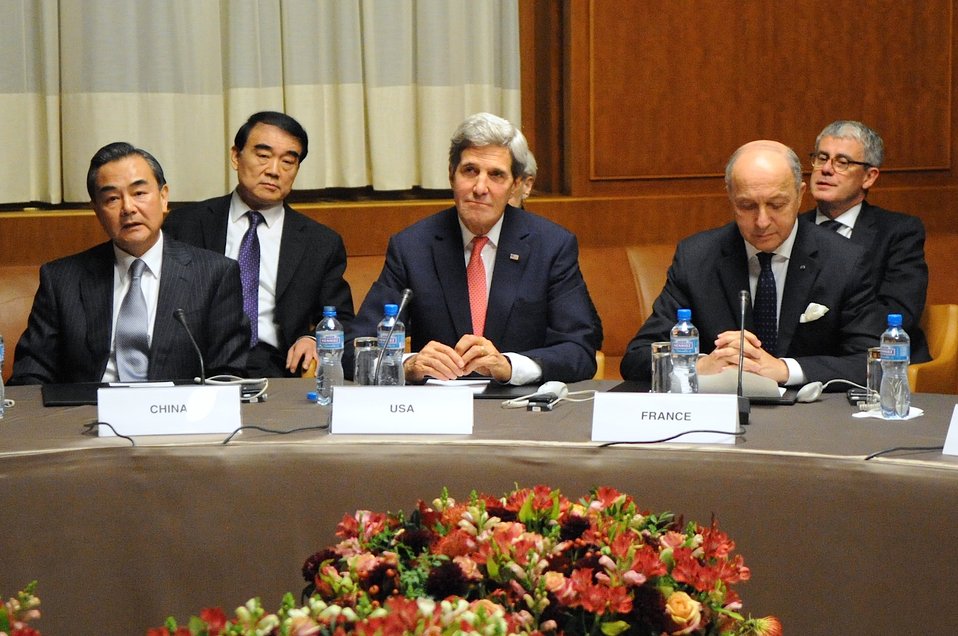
P5 1 Talks With Iran in Geneva, Switzerland

U.S. Secretary of State John Kerry sits between Chinese Foreign Minister Wang Yi and French Foreign Minister Laurent Fabius at the United Nations Headquarters after the P5 1 member nations concluded a nuclear deal with Iran in Geneva, Switzerland, on November 24, 2013.